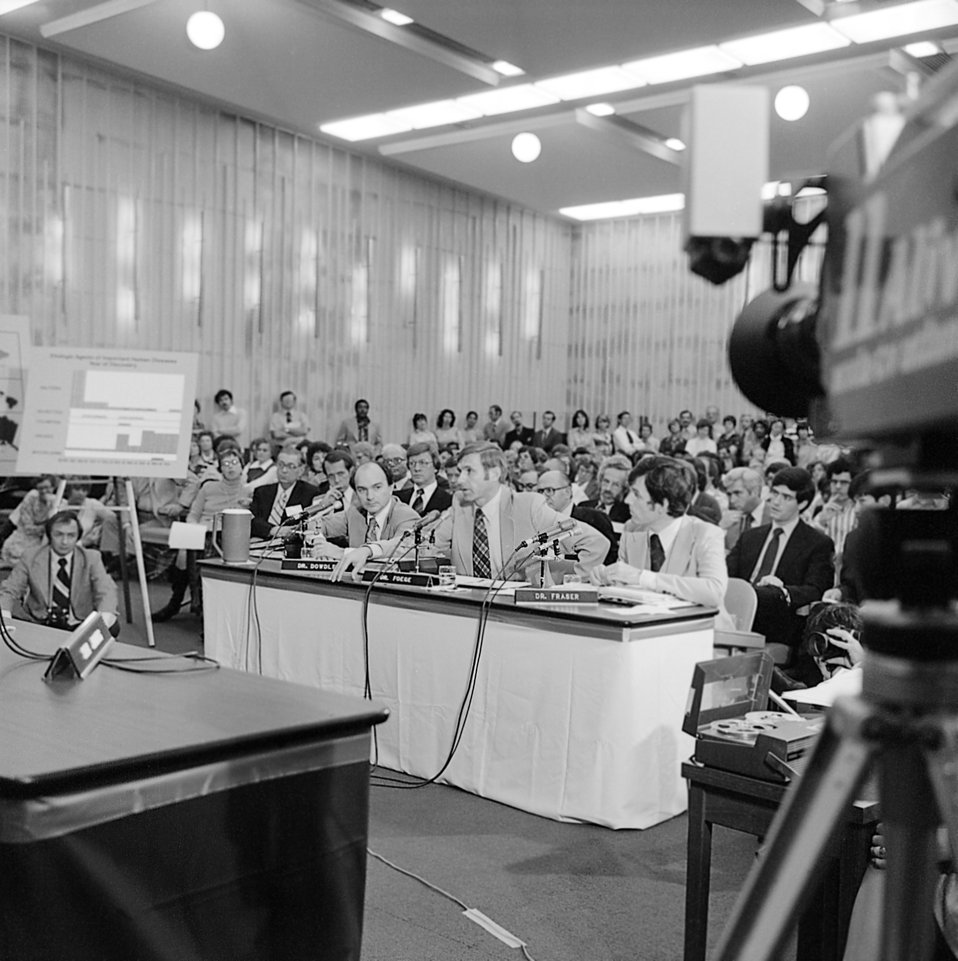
A Legionnaires' disease senate hearing during the outbreak of the 1970s.